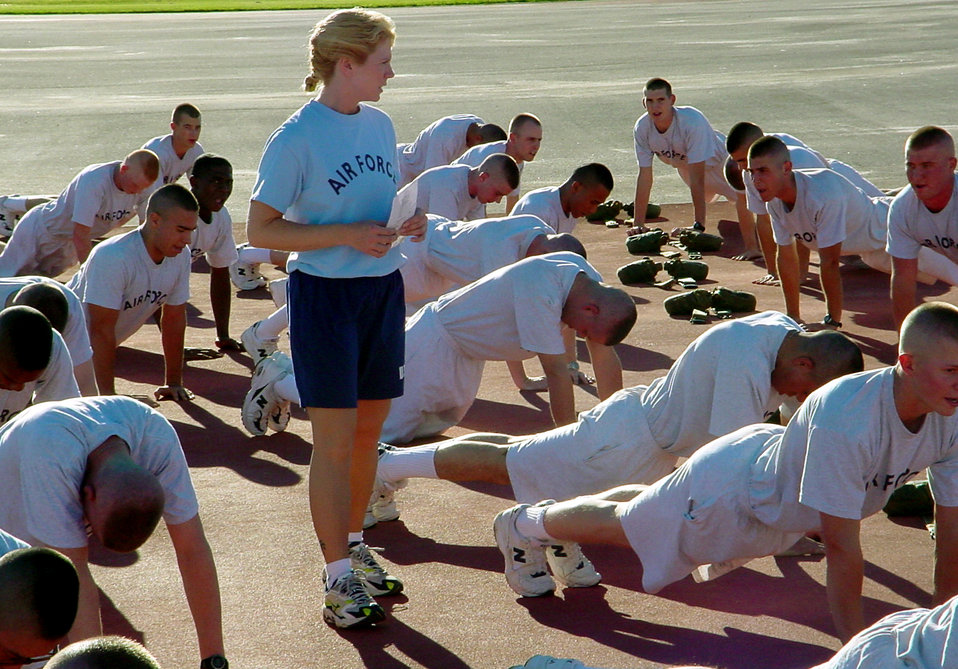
Give me 20!

LACKLAND AIR FORCE BASE, Texas -- Staff Sgt. Dawn Adams (standing), a military training instructor with the 331st Training Squadron here, monitors trainees' pushups during physical readiness training. New graduation standards for physical fitness take effect in basic training Oct. 12.